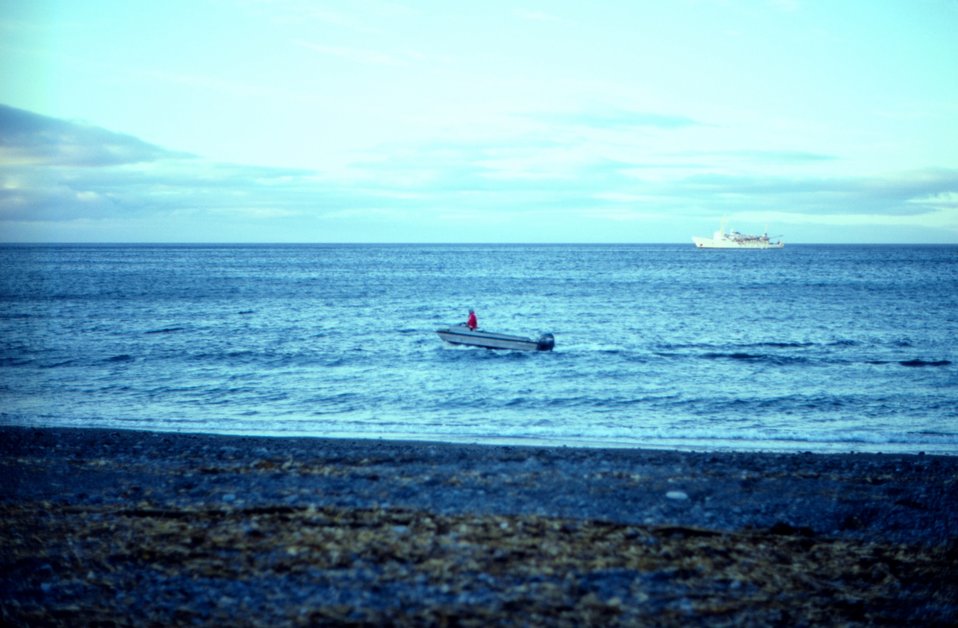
NOAA Ship RAINIER crew beach party at Chowiet Island in the Semidi Island group southwest of Kodiak Island. RAINIER in background. Transportation to and from beach in the foreground.